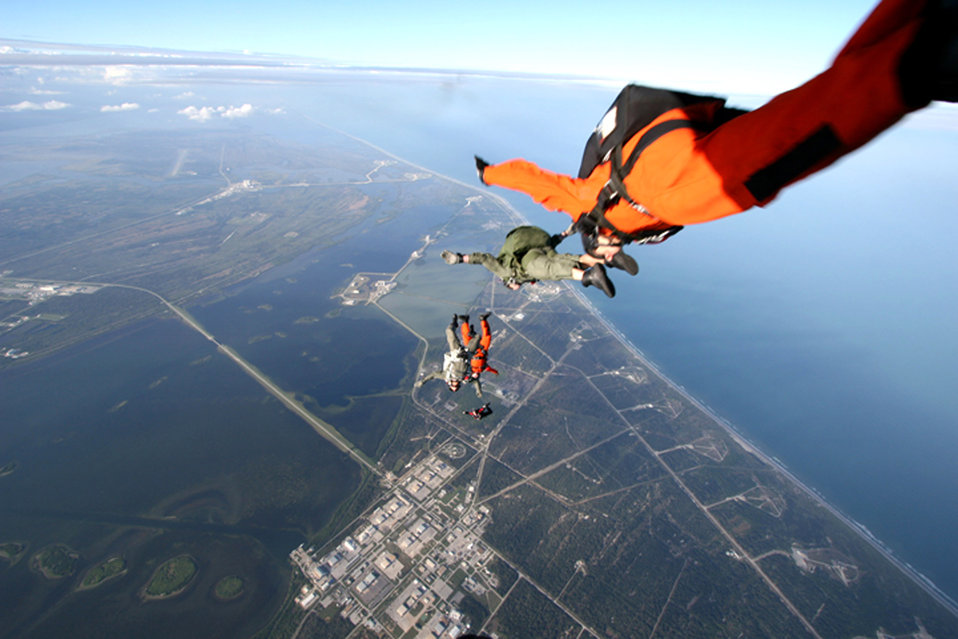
Mission without borders

As part of an international search and rescue exercise, Air Force Reserve pararescuemen from the 920th Rescue Wing at Patrick Air Force Base, Fla., jump with Canadian rescue forces from the 435th Air Transport and Rescue Squadron in Winnipeg, Canada.